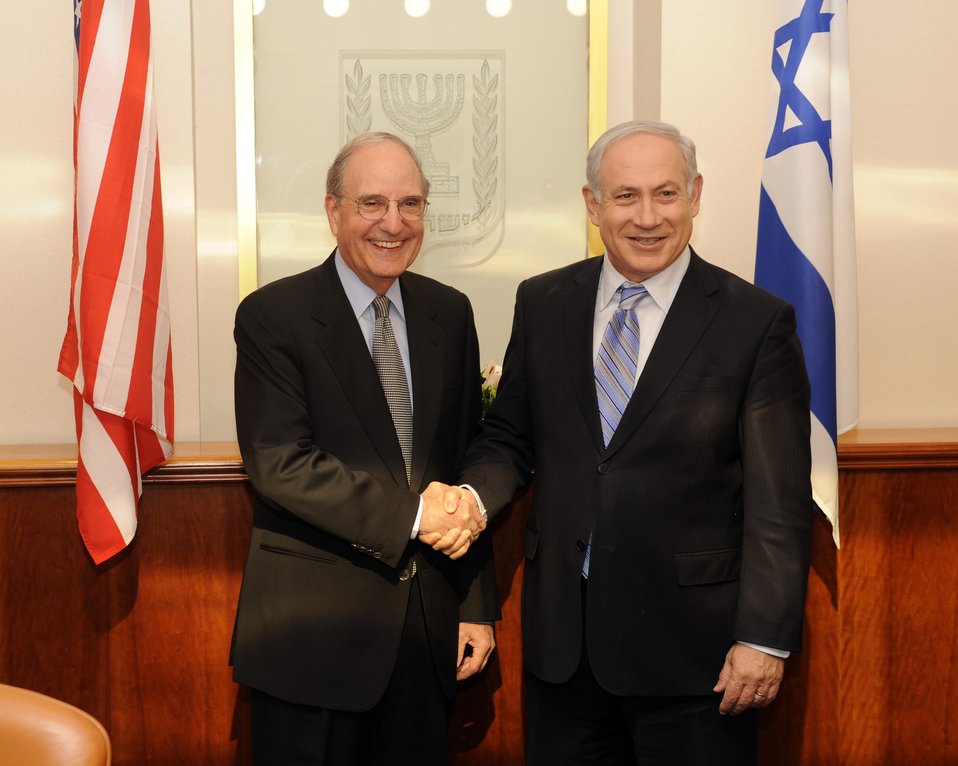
Special Envoy Mitchell Shakes Hands With Israeli Prime Minister Netanyahu

Special Envoy for Middle East Peace George Mitchell shakes hands with Israeli Prime Minister Binyamin Netanyahu at the Prime Minister’s office in Jerusalem on May 5, 2010.